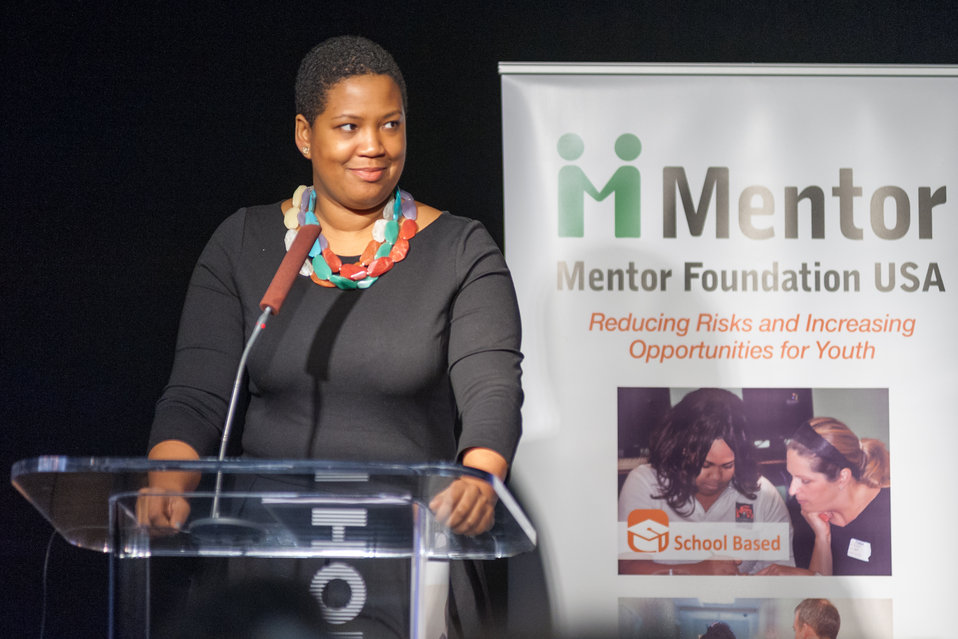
Mentor NDFW Event 2014

Mentor Foundation USA, in partnership with the National Institute on Drug Abuse (NIDA) and other key partners hosted a Youth Drug Facts Rally at the House of Sweden on Thursday, 30th January 2014. Approximately 200 students from five local high schools attended and had the opportunity to interact with top U.S. scientific experts, and inspiring guest speakers to “shatter the myths” about drugs and substance abuse, while pledging to stay drug-free.